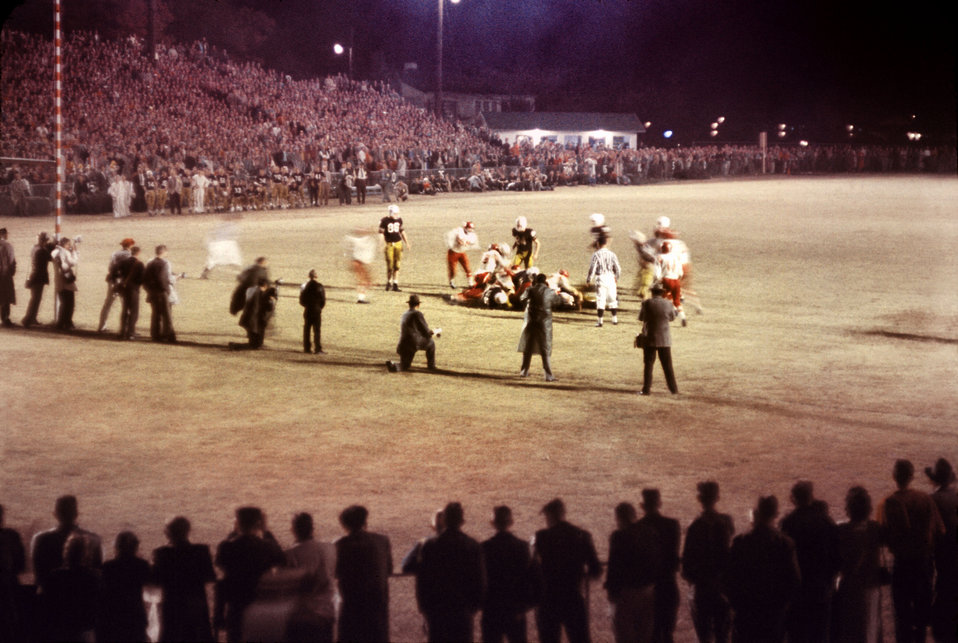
Oak Ridge High School Football

DOE photo by Ed Wescott Oak Ridge High School Football Oak Ridge Tennessee Nov. 1958